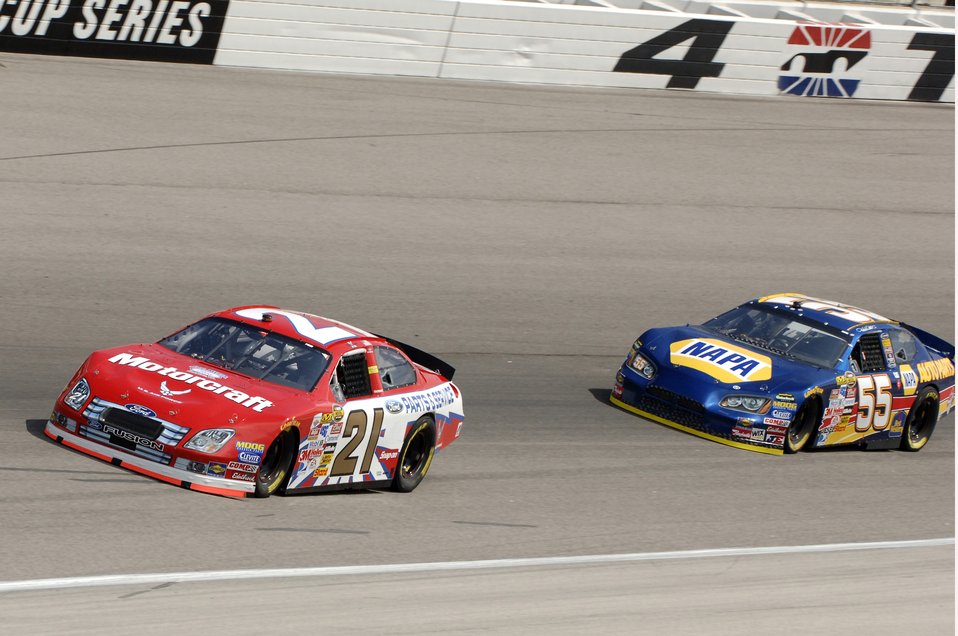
NASCAR thrills

Ken Schrader drives the NASCAR Nextel Cup Series Air Force number 21 car during the final practice session Saturday, April 8, 2006, in preparation for the Samsung/Radio Shack 500 at Texas Motor Speedway. Ken Schrader started in 32nd position and finished in 16th place.